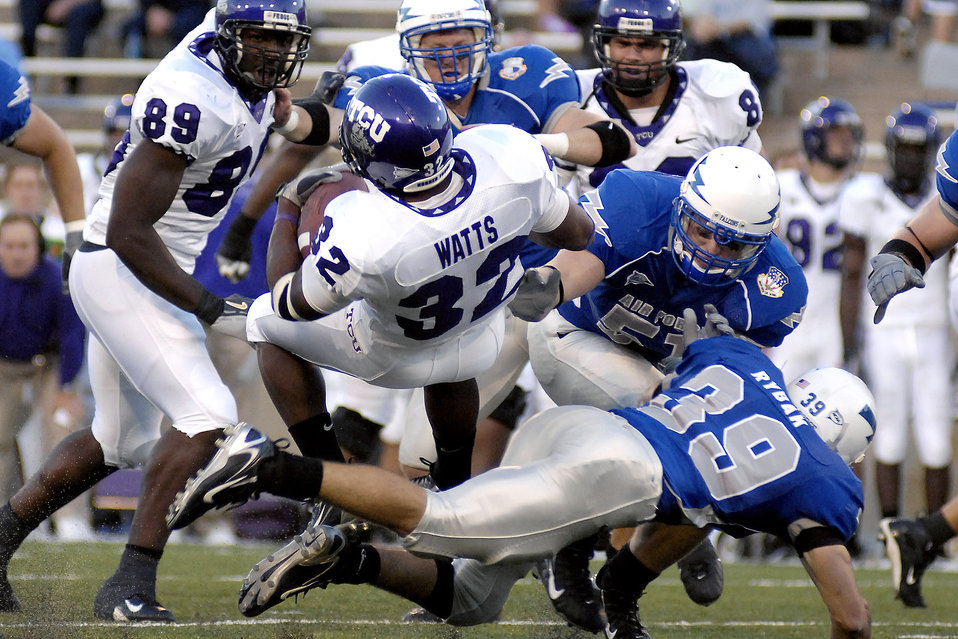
Falcons edge Frogs in overtime

TCU tailback Justin Watts is spun around by Air Force cornerback Garrett Rybak Sept. 13 in Falcon Stadium as Falcon linebacker Aaron Shanor closes in. The Air Force defense limited the Horned Frogs to 89 yards rushing in 32 attempts in the bluesuiters 20-17 overtime win.